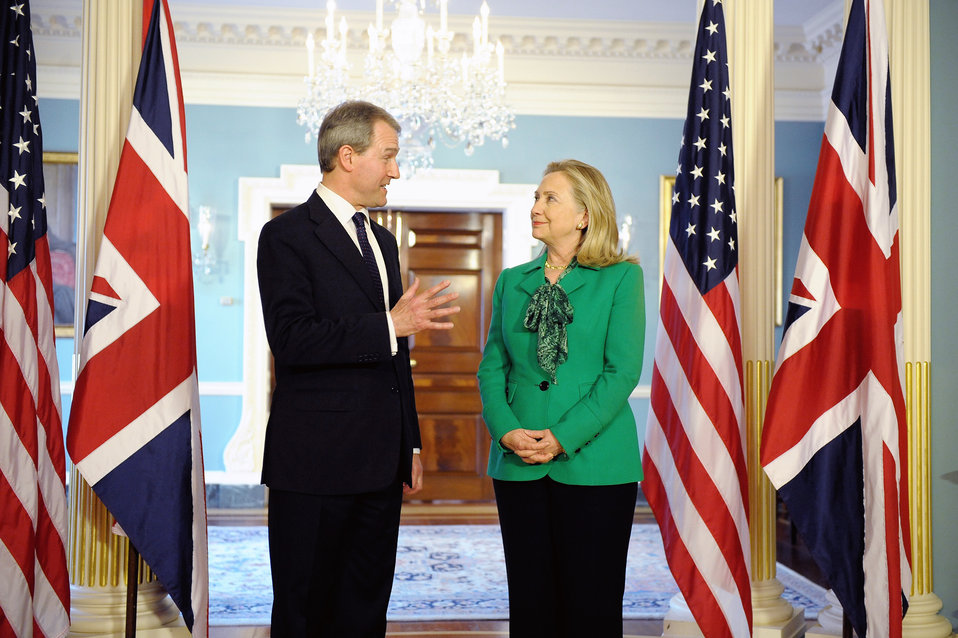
Secretary Clinton Meets With UK Secretary of State for Northern Ireland Paterson

U.S. Secretary of State Hillary Rodham Clinton meets with UK Secretary of State for Northern Ireland Owen Paterson at the U.S. Department of State in Washington, D.C., on March 20, 2012.